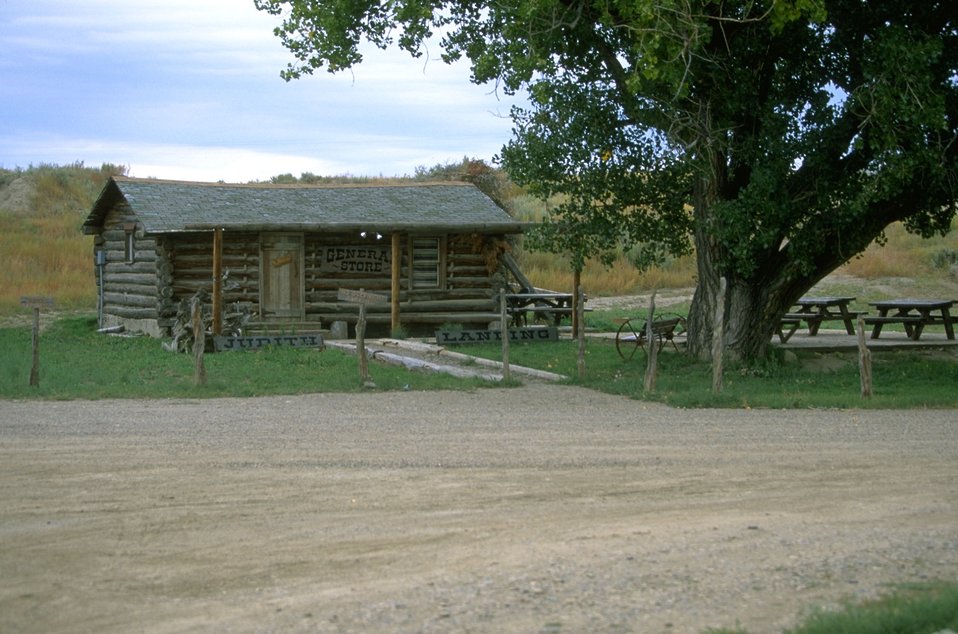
General store at Judith Landing along the Upper Missouri National Wild and Scenic River